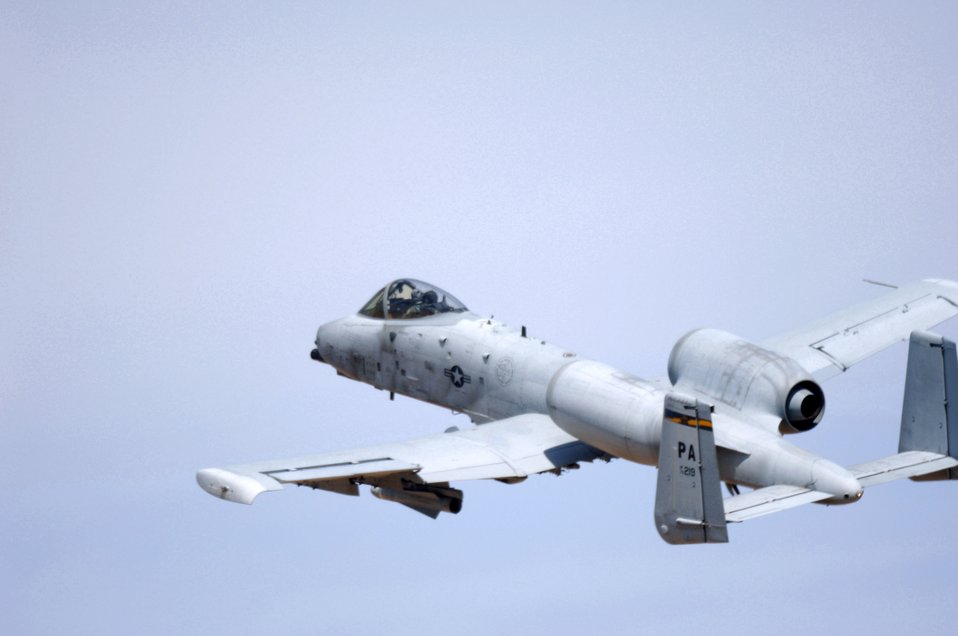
Hawgsmoke

A pilot of the Pennsylvania team maneuvers his A-10 Thunderbolt II, Thursday, March 23, 2006, over Davis-Monthan Air Force Base, Ariz., during Hawgsmoke 2006 competition. The competition marks the 30th Anniversary of the Warthog. Hawgsmoke is a biennial bombing and tactical gunnery competition of the A-10, in which 20 squadrons worldwide come together to fly the Warthog and compete for the honor of the